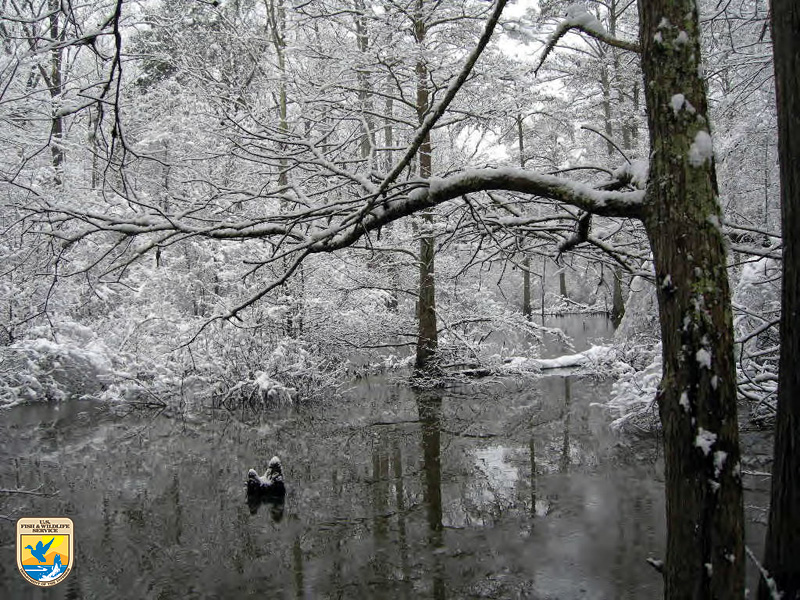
Little River National Wildlife Refuge in winter

Little River National Wildlife Refuge, OK